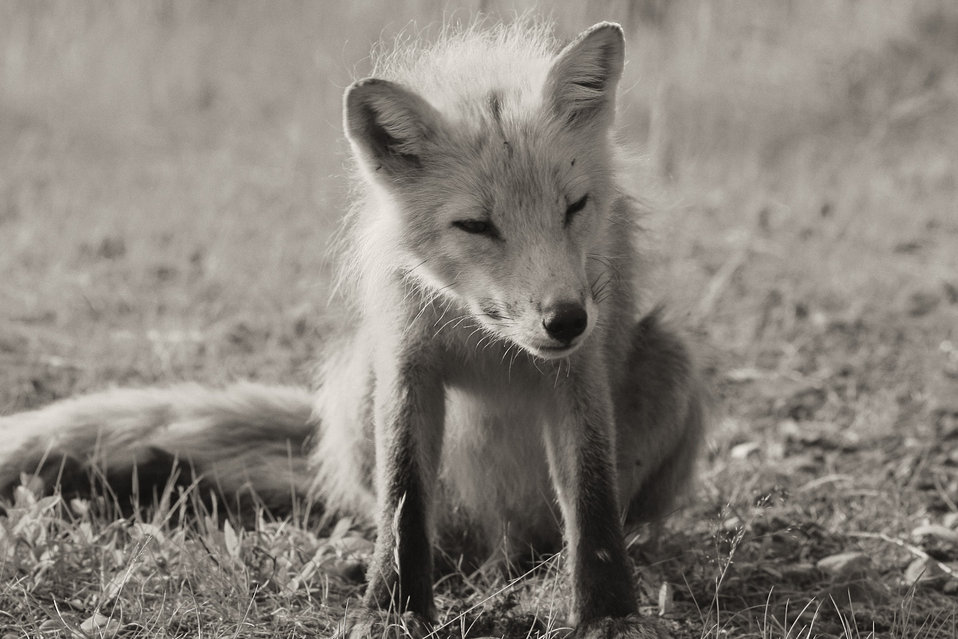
Sunny spot

Lisa Hupp/USFWS